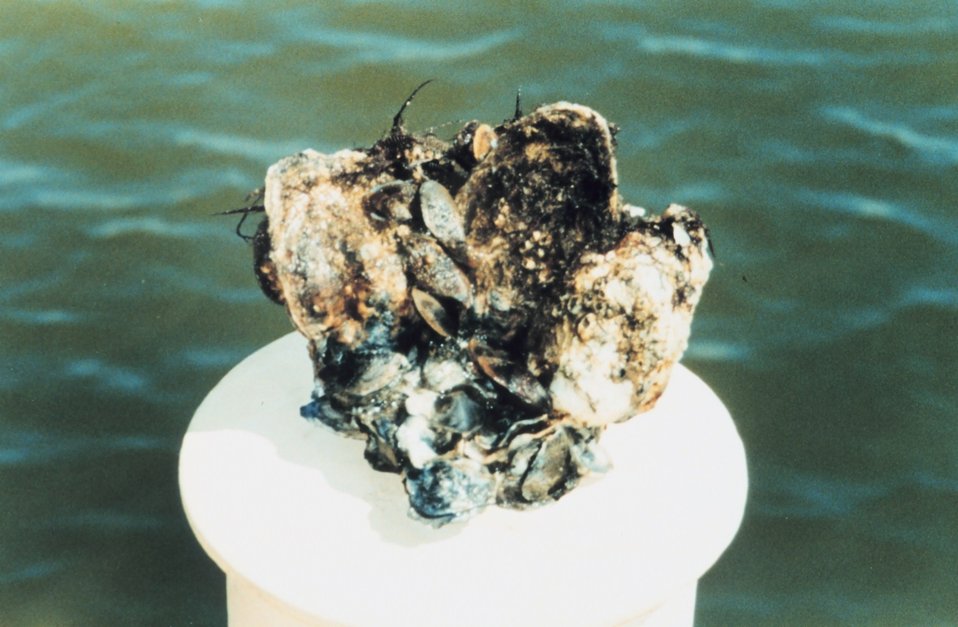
A small reef of oysters and mussels found in the Choptank River.